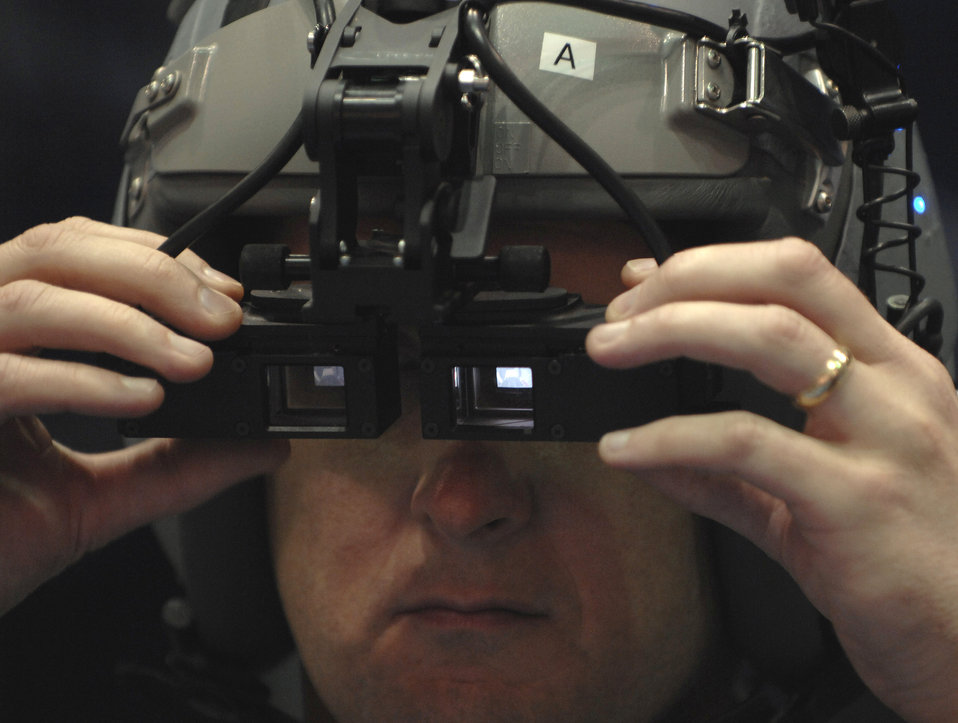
It's clear to me now

Maj. Dave Edney tries on a helmet which features augmented reality Nov. 30 during the Interservice/Industry Training, Simulation and Education Conference in Orlando, Fla. The device allows a trainee to see real and virtual reality as visual display which adds different scenarios to training.